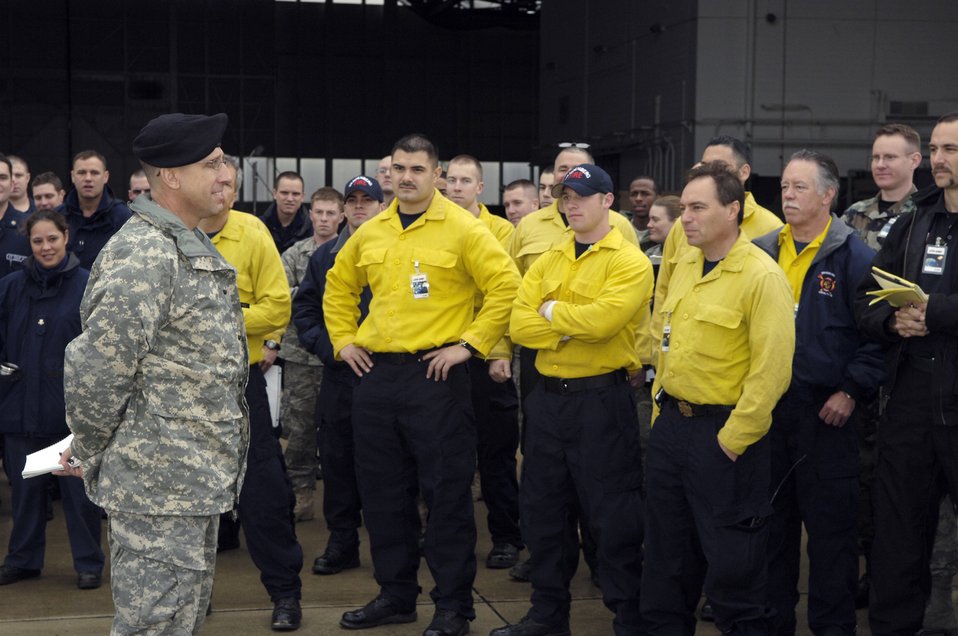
McGuire Airmen support downed satellite cleanup

Army Brig. Gen. Jeff Horne briefs the task force members about their mission in the satellite recovery Feb. 20 at McGuire Air Force Base, N.J. The JTF was the recovery part of Operation Burnt Frost which covers the shoot down of the errant satellite loaded with hydrazine. The supplies were for 15 federal agencies tasked to handle the environmental effects of the satellite's reentry into the atmosphere. General Horne is the Joint Task Force commander.